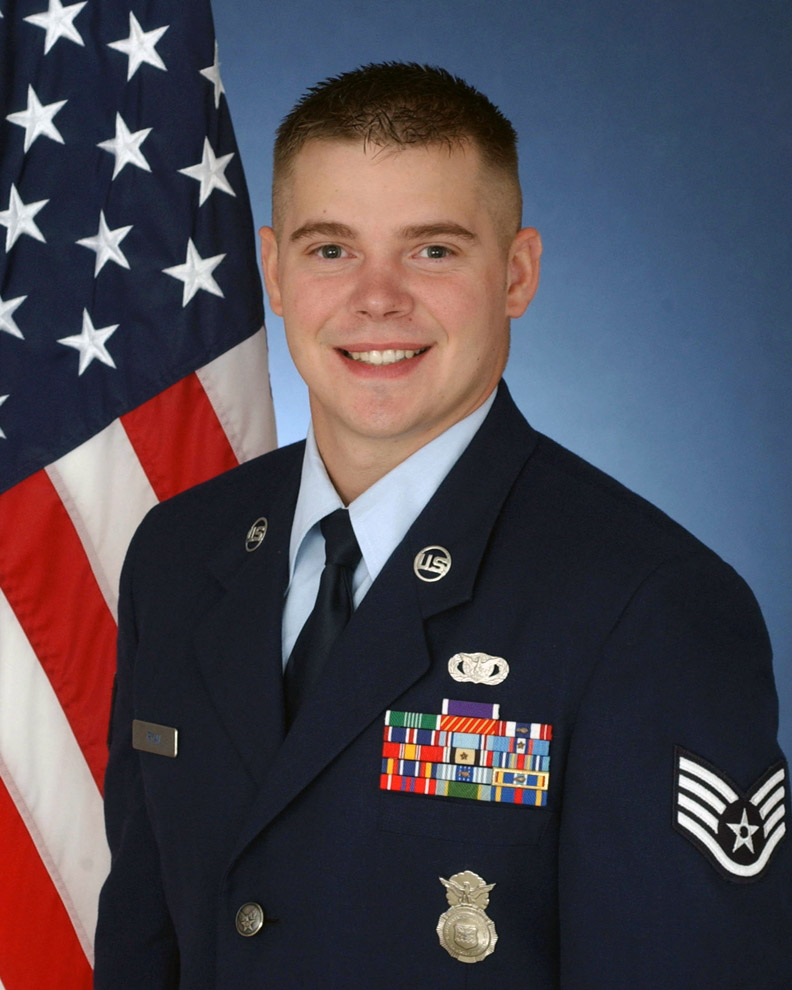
Air Force officials honor 12 Outstanding Airmen of the Year

Staff Sgt. Shawn Ryan of Sheppard Air Force Base, Texas, is one of the 12 Outstanding Airmen for 2008.